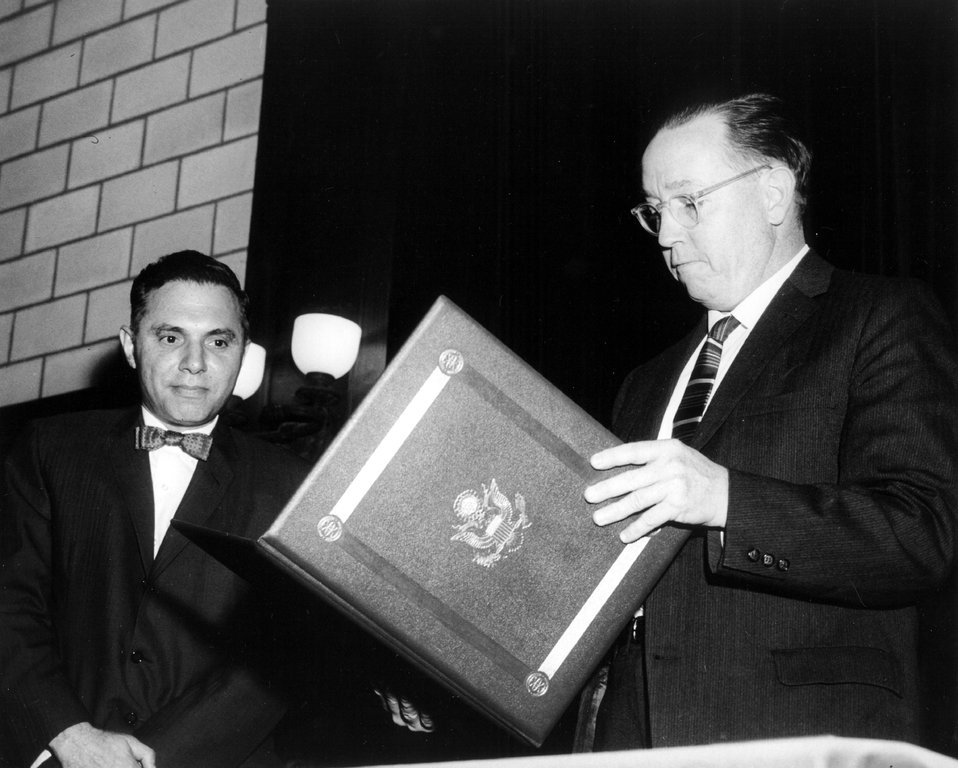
Lawrence Award, 1966.